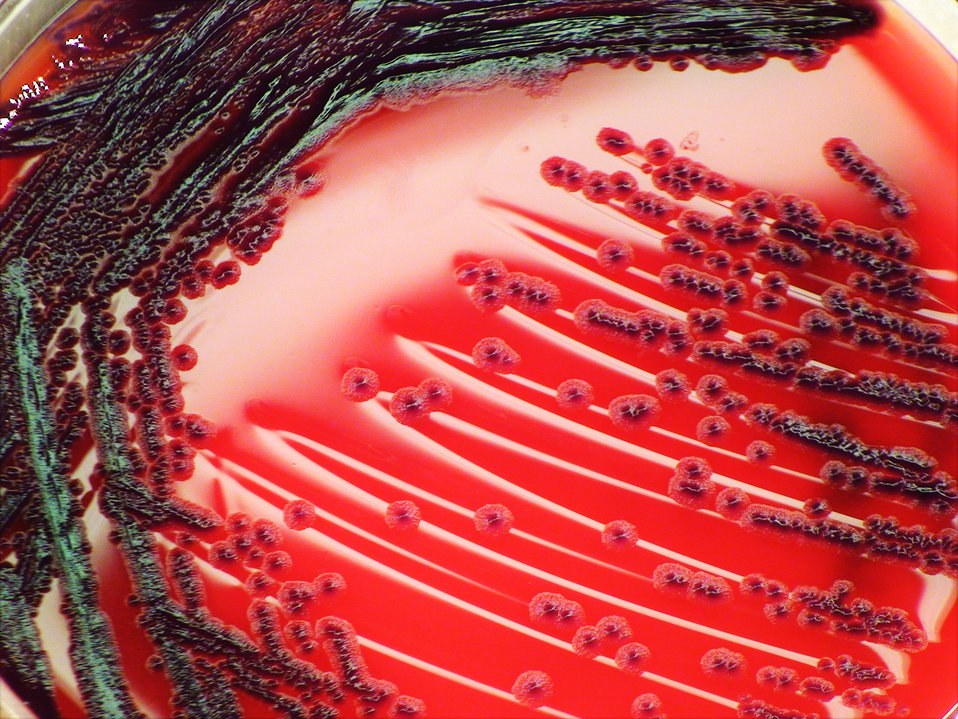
As a closer view of PHIL 12433, this photograph depicts the colonial morphology displayed by Gram-negative Chromobacterium violaceum bacteria, which was grown on a medium of sheep's blood agar (SBA), for a 24 hour time period, at a temperature of 37�C. Note the dark-violet coloration of these bacterial colonies.